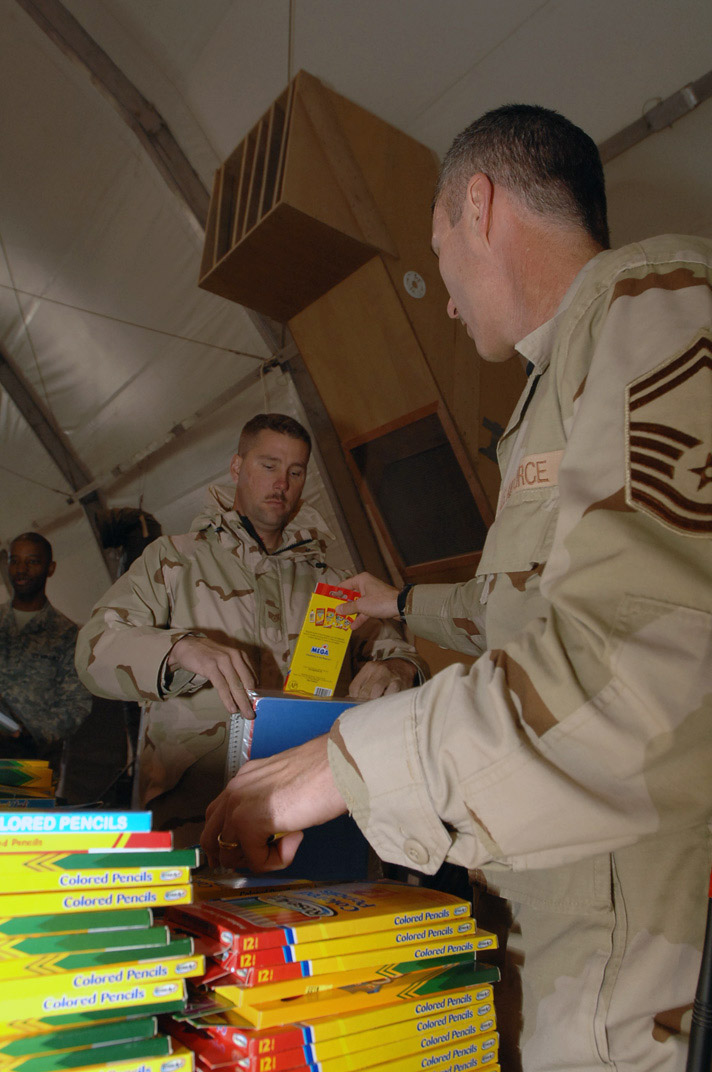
Iraqi Operation Child donations packed, ready

Senior Master Sgt. Vincent Marler drops colored pencils into Staff Sgt. Bobby Siers' bag of school supplies at Ali Base, Iraq,Dec. 22. The Airmen are sorting through donated school supplies in support of Operation Iraqi Child led by the 407th Air Expedtionary Group Focus 5/6 and Top 3 councils. In just over a month, Airmen on base collected thousands of school supply items, soccer balls, stuffed animals and toys. The donated items will be given to Iraqi families in the An Nasiriyah area villages. Sergeant Marler is assigned to the 407th Expeditionary Operations Support Squadron and is deployed from Whiteman Air Force Base, Mo. Sergeant Siers is assigned to the 407th Expeditionary Civil Engineer Squadron and is deployed from Hickam AFB, Hawaii.